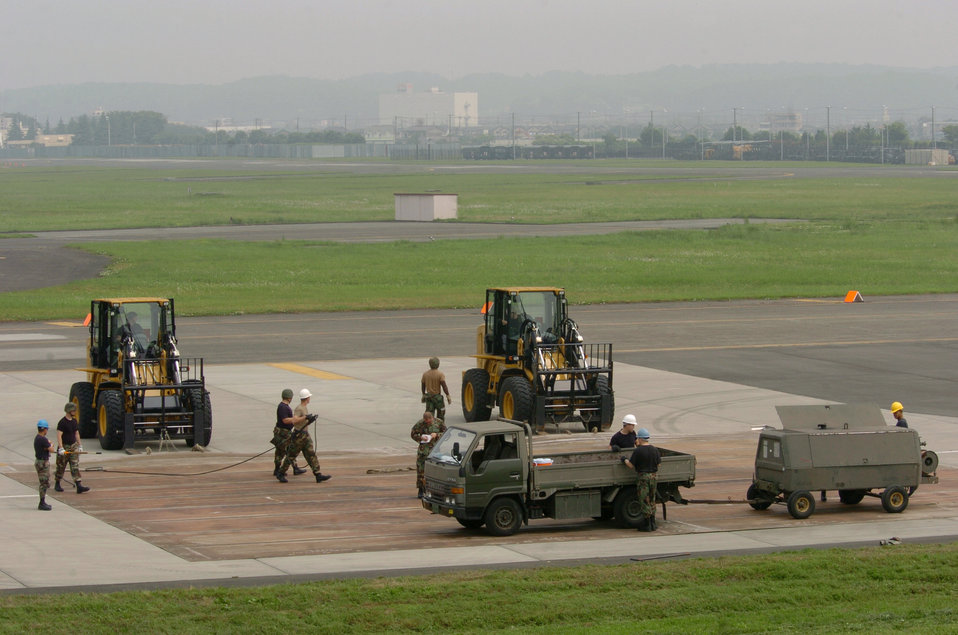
Running fiber

YOKOTA AIR BASE, Japan -- Airmen of the 374th Civil Engineer Squadron move fiberglass mats during airfield damage repair training on the flightline here. During the training, the Airmen simulated drilling holes into the runway to secure the mats. The mats provide a protective surface for aircraft landing in austere locations. The Airmen are trained to deploy into bare-base locations, assess airfield capabilities, prepare aircraft landing areas, clear obstacles, install emergency airfield lighting systems and repair airfield damage.